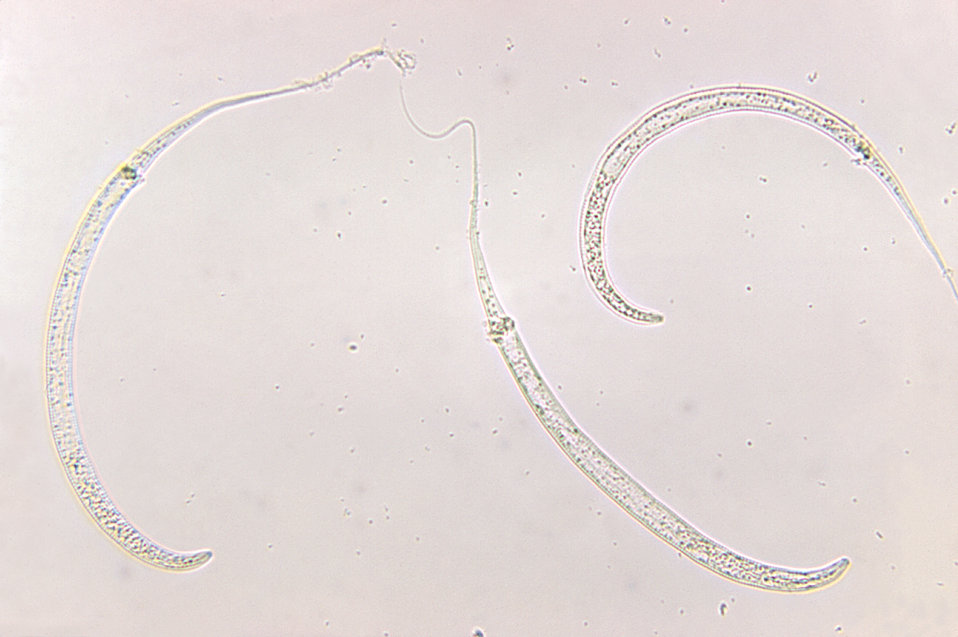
Magnified 125X, this photomicrograph revealed the presence of three Guinea worms, Dracunculiasis medinensis. See PHIL 8209 through 8235 for images captured in Ghana documenting the ravages of this nematode, and the link below diagramming this parasite's lifecycle.Clinical Features: